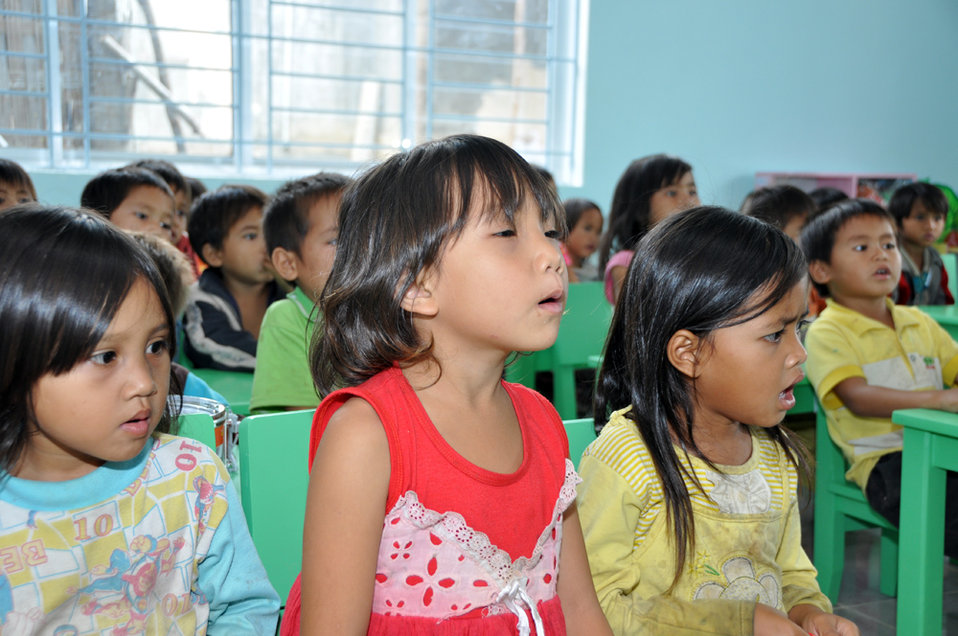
USAID contributes to refurbished pre-schools and teacher training in Vietnam